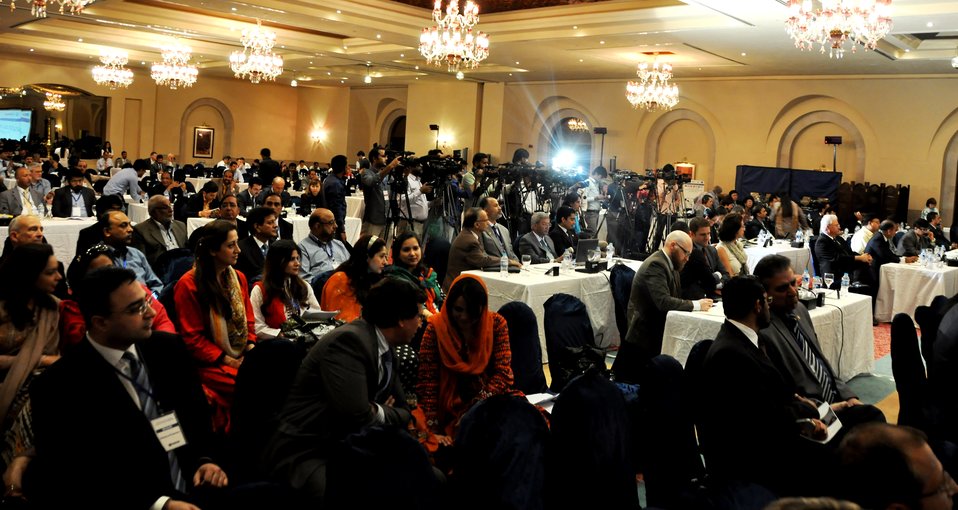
Central Asian Business Opportunities Conference

More than 250 private and public sector participants from Pakistan, Afghanistan, and the Central Asian Republics of Kazakhstan, Kyrgyzstan, Turkmenistan, Tajikistan, and Uzbekistan came together to seek new business opportunities and pursue greater regional coordination of trade and investment.